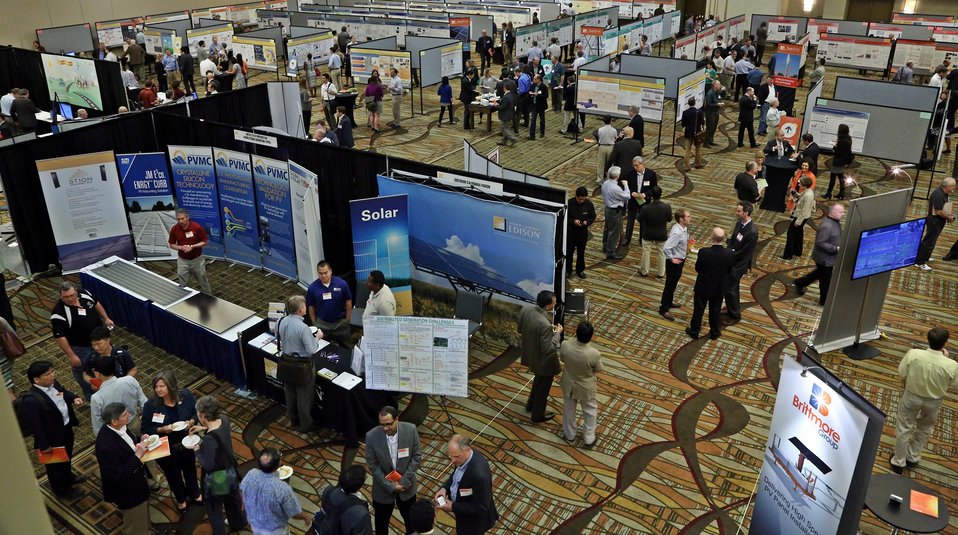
Tech Forum 8

The Tech Forum floor from above.